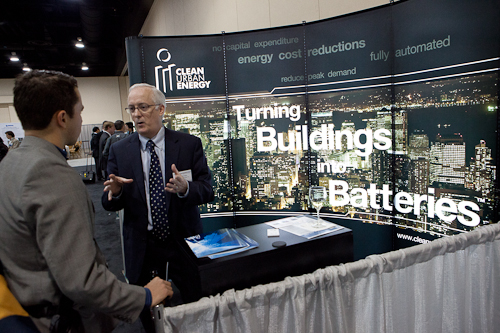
Turning Buildings into Batteries

Chicago-based Clean Urban Energy uses the thermal properties of buildings’ mass to store cooling energy during off-peak, unoccupied hours when electricity prices are low. The stored cool is released throughout the day, reducing energy consumption during peak times.